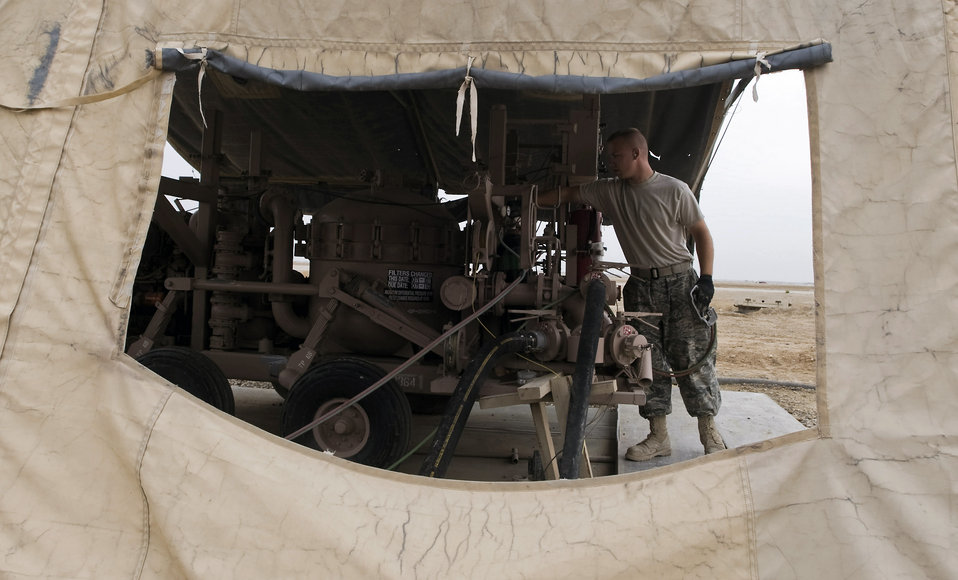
Fill 'er up

Senior Airman Kenneth Savchuk prepares to refill his fuel distribution truck Nov. 3 at Ali Base, Iraq. The Airman is deployed from Scott Air Force Base, Ill.